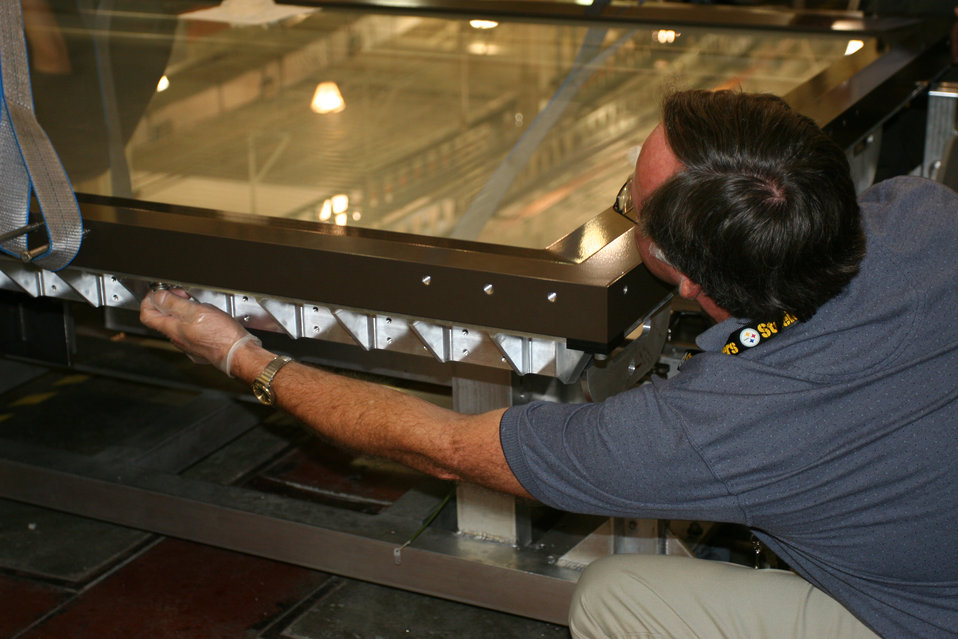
Waldseemüller map case

NIST technician Dana Strawbridge bolts the top frame of the map encasement to its base during a test sealing of the encasement prior to shipping to the Library of Congress.